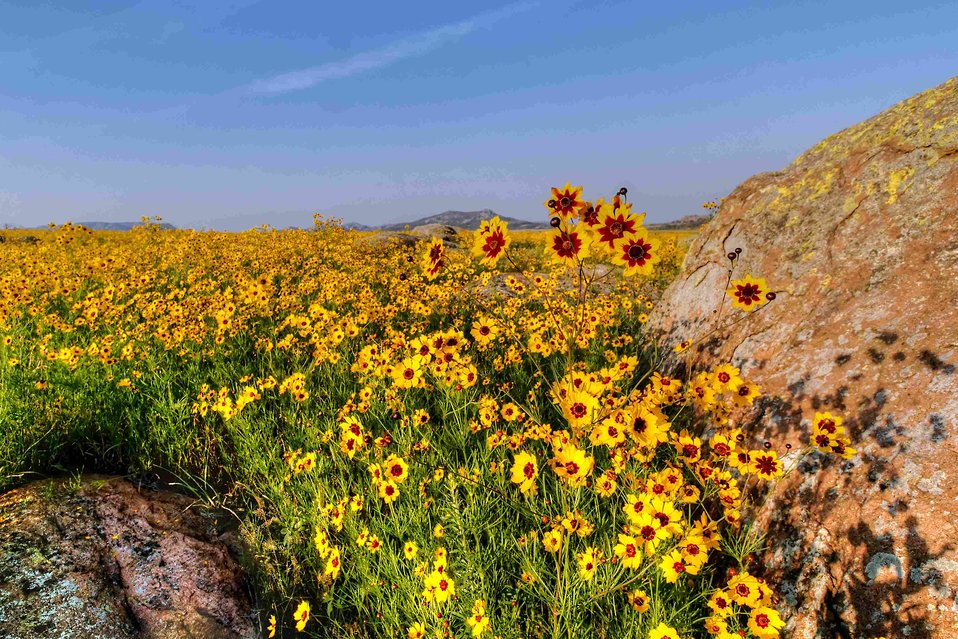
Field of coreopsis

Wildflowers at Wichita Mountains Wildlife Refuge in Oklahoma.